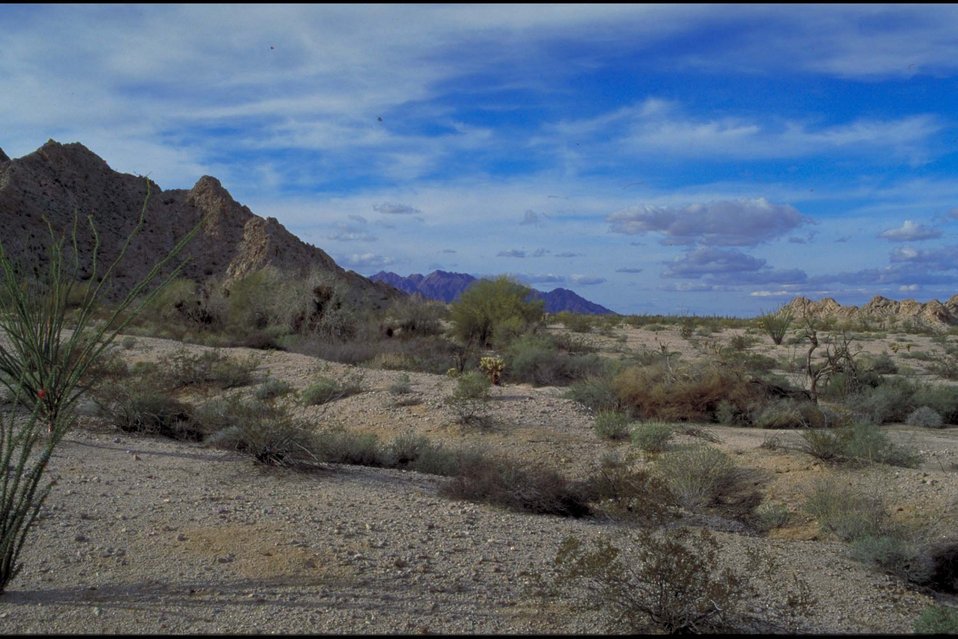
Barry M. Goldwater Range